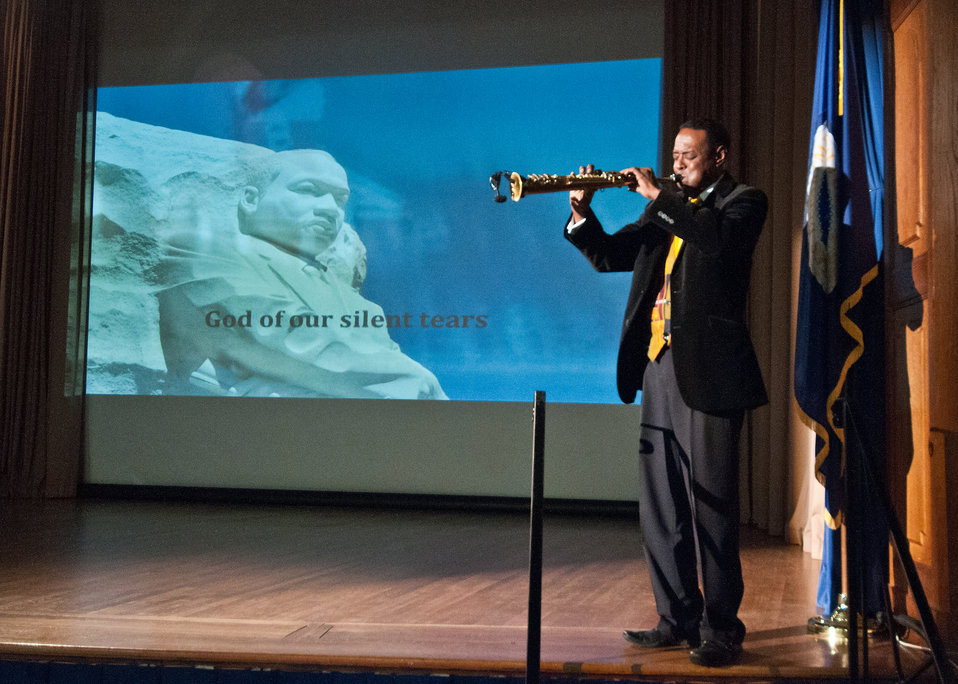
J. Plunky Branch of the Afro-Funk Jazz Group, “Plunky and Oneness” performs a saxophone solo of The Negro National Anthem at the National Service Day and Martin Luther King Celebration in honor of Dr. Martin Luther King Jr.’s contributions to the Civil Rights Movement at the United States Department of Agriculture in Washington, D.C., on Thursday, January 12, 2012.